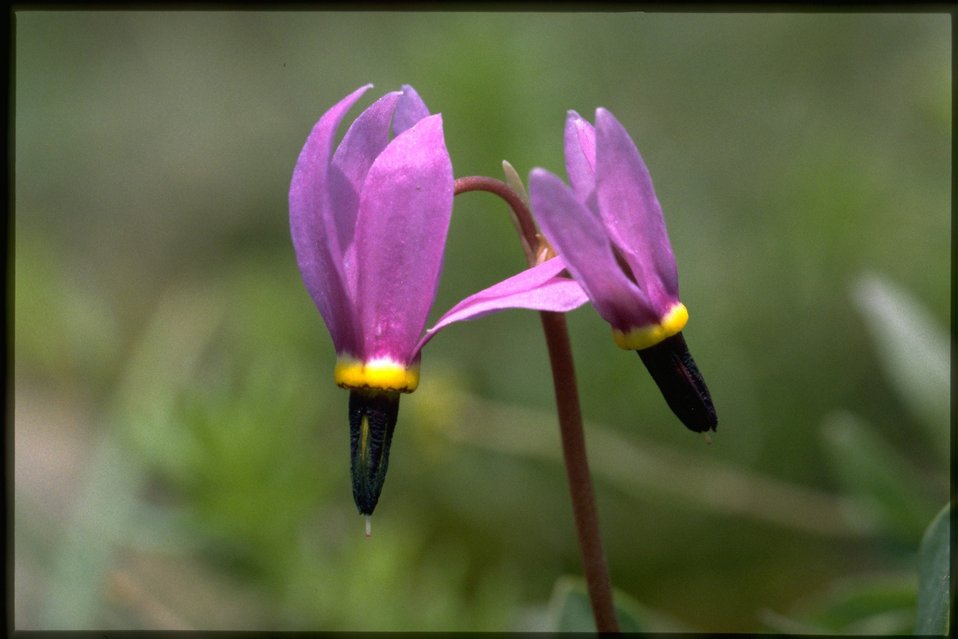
Closeup shot of Dark-Throat Shooting Star, Dodecatheon Pulchellum wildflowers.